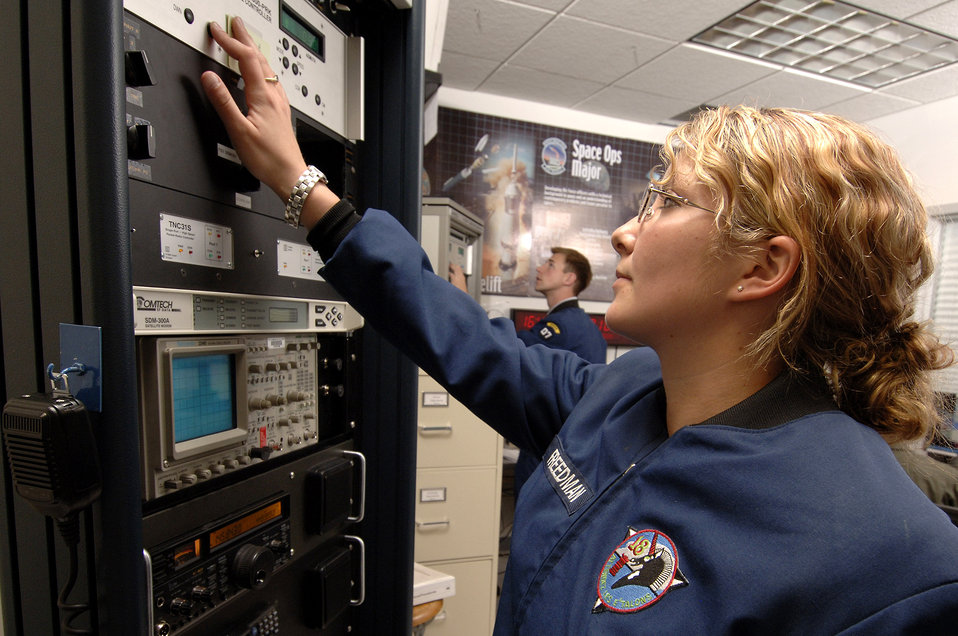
Satellite-savvy cadets accomplish out of world experiments

Senior cadet Charlette Freedman configures the ground station antenna's into the right location for the next pass of Falcon Satellite-3 at the U.S Air Force Academy, Colo. The satellite was designed and built, by Academy cadets who now test and operate it. The project is administered by the USAFA Space Systems Research Center.